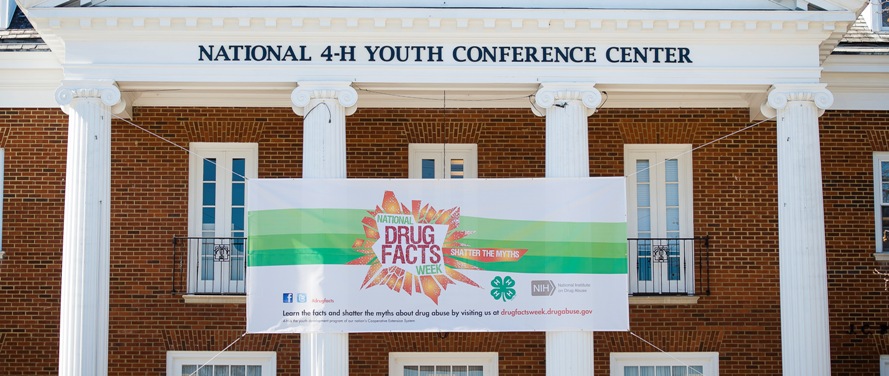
National 4-H Council Celebrates National Drug Facts Week, Launches New Healthy Living App

National 4-H Council in partnership with the National Institute on Drug Abuse (NIDA) hosted the first Health Rocks! Youth Ambassador Summit on January 30. The event, which was part of NIDA’s 4th annual National Drug Facts Week, brought together youth and adult leaders from several states and industry leaders to discuss solutions to fight substance use and abuse in their communities.